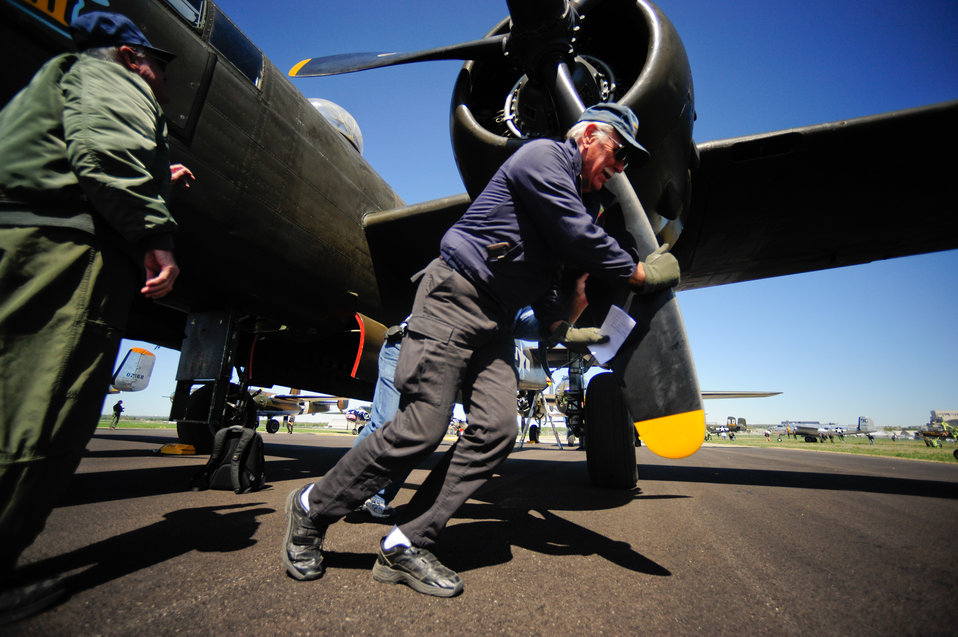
68th Doolittle Raiders Reunion

The crew of the